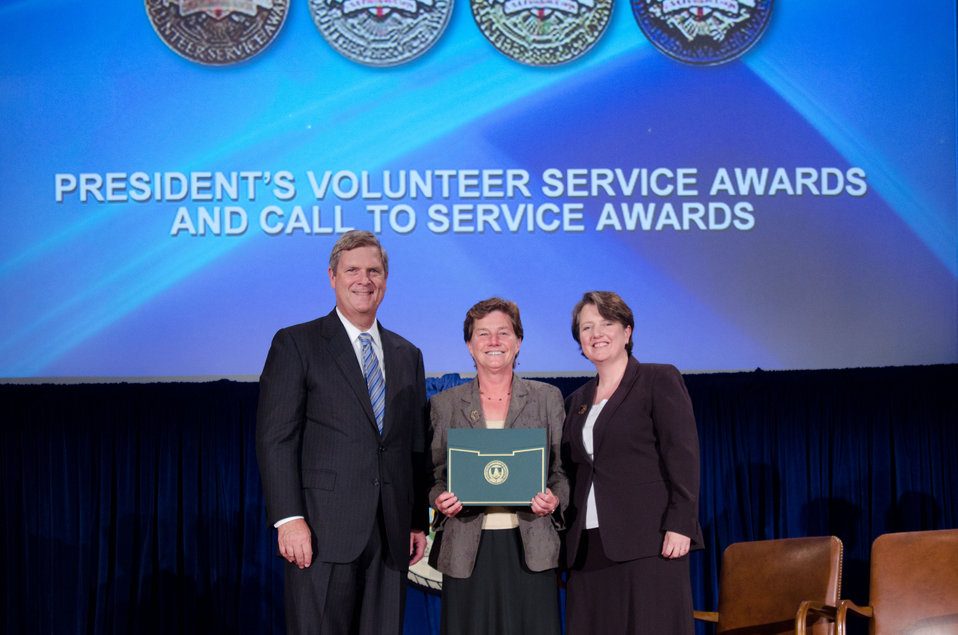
Agriculture Secretary Tom Vilsack (l) and Deputy Secretary Kathleen Merrigan (r), presents the President’s Volunteer Service Awards and Call to Service Award to Deanna Stouder accepting on behalf of Kathie Jermstad,
Forest Service. On Wednesday, September 14, 2011 in the Jefferson Auditorium at the US Department of Agriculture in Washington, DC.